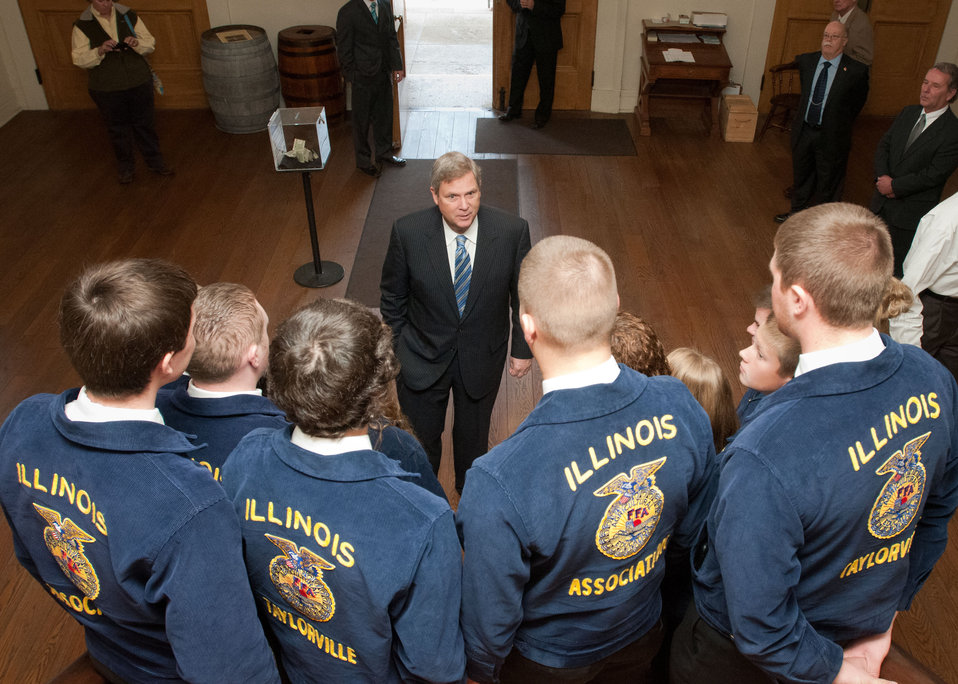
Agriculture Secretary Tom Vilsack (center) spent a few moments with Illinois Future Farmers of America (FFA) before unveiling the new graphic to commemorate the 150th Anniversary of U.S. Department of Agriculture in the hometown of its founder President Abraham Lincoln. The event took place at the Old State Capitol in Springfield, IL, on Wednesday, November 2, 2011.